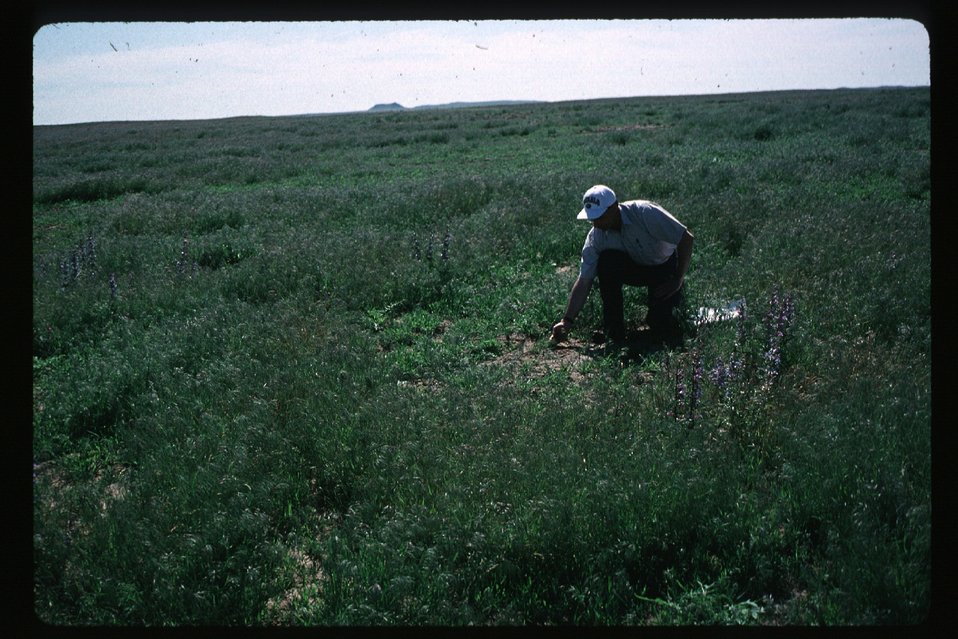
OUST Test Site Rangeland Four Rivers Field Office LSRD Lower Snake River District